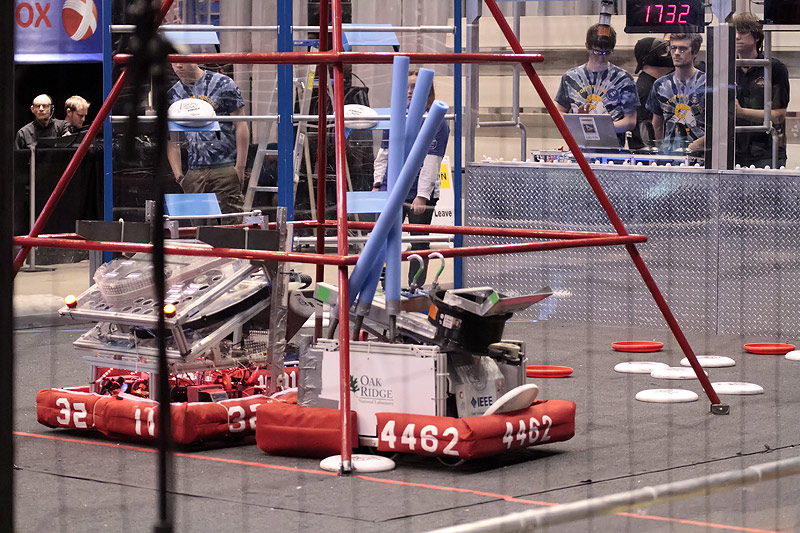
Teams from Hardin Valley Academy, Oak Ridge High School, Halls High School and Roane County High School competed in the First Robotics Worldwide Finals held April 24-27, 2013 in St. Louis.

The Four high schools were among 14 teams sponsored by UT-Battelle, the managing contractor of Oak Ridge National Laboratory, during the 2013 season.